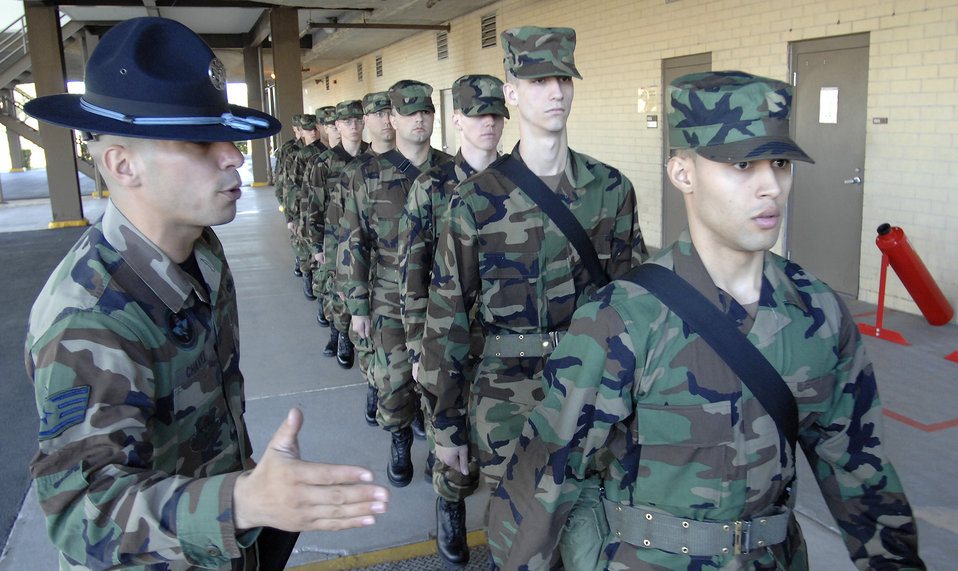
Serving through the season: Staff Sgt. Jacob Chavez

Staff Sgt. Jacob Chavez corrects a trainee on his marching Dec. 27 at the 322nd Training Squadron at Lackland Air Force Base, Texas. Sergeant Chavez is a military training instructor who is spending his holidays training new Airmen.